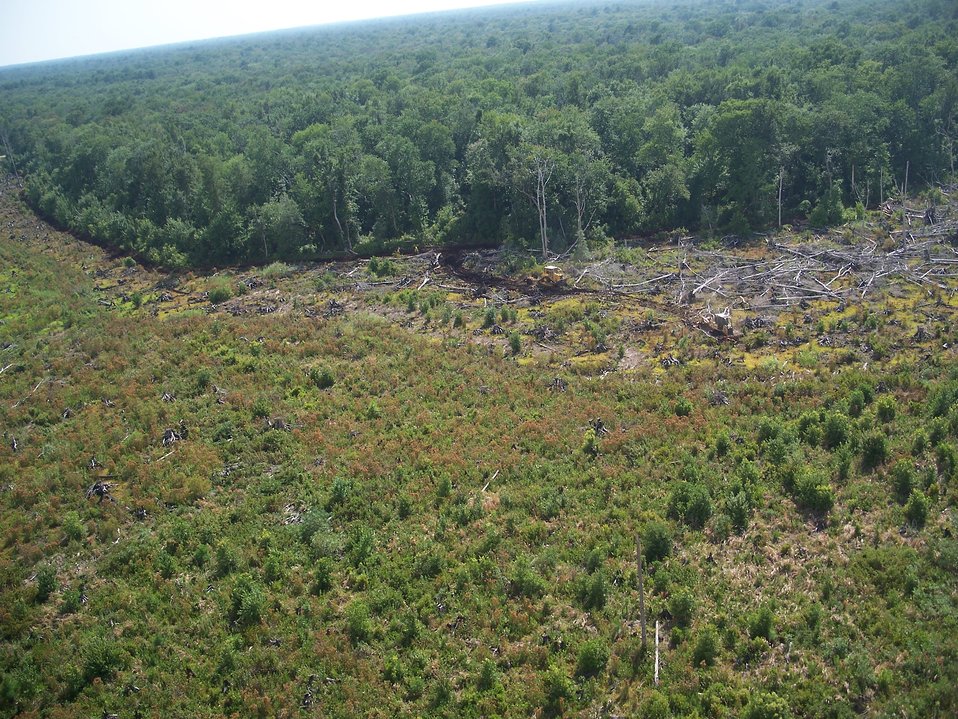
Thinking inside the box

Suffolk, VA, August 2011: Firefighters build fire line with bulldozers in advance of the fire front to make a defensible front. A combination of dozer lines and roads along ditches make a box in which firefighters hope to keep the fire contained.